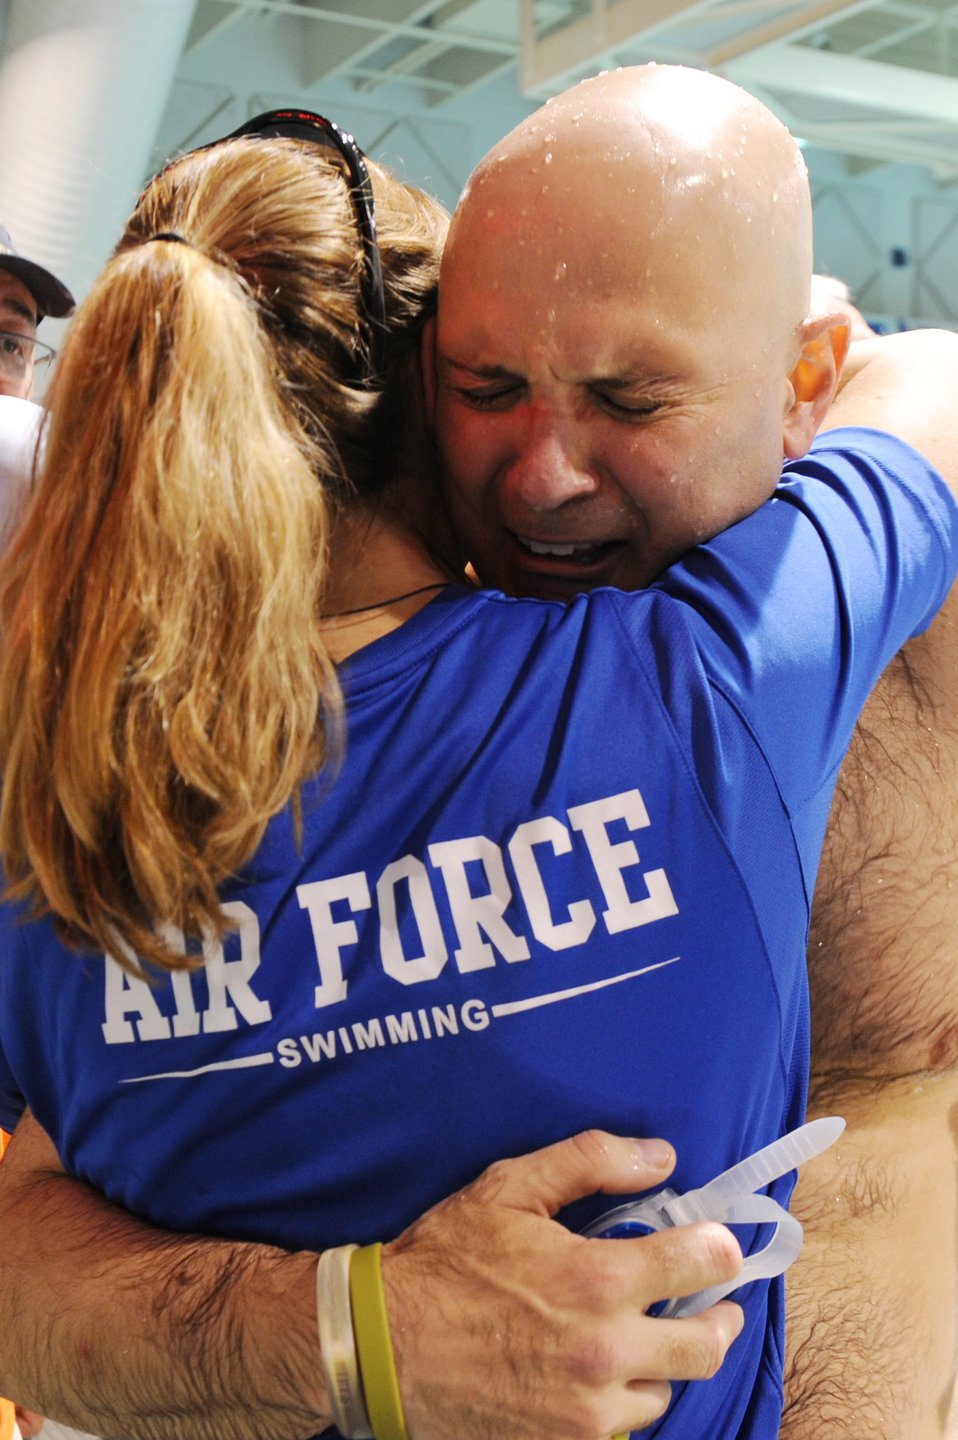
Swimming Prelims

Air Force coach Cami Stock hugs Retired Chief Master Sgt. Damian
Orslene after he finished the mens 50 meter freestyle during the
swimming competition of the inaugural Warrior Games at the U.S.
Olympic Training Center in Colorado Springs, Colo., May 18, 2011. Some
200 wounded warriors and disabled veterans from all the military
services are competing in paralympic-style athletic events May 16-21.